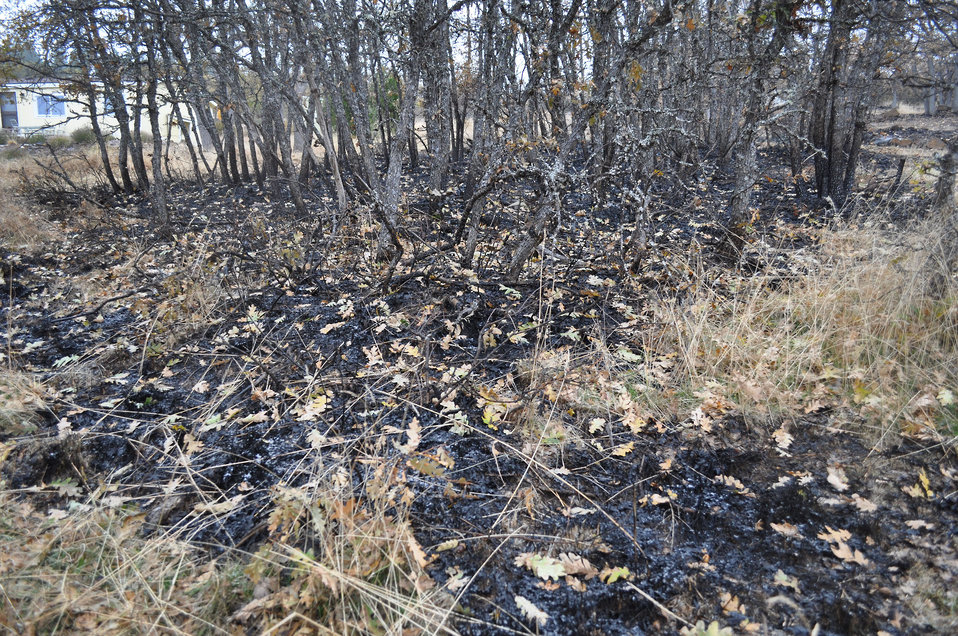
Prescribed burn example